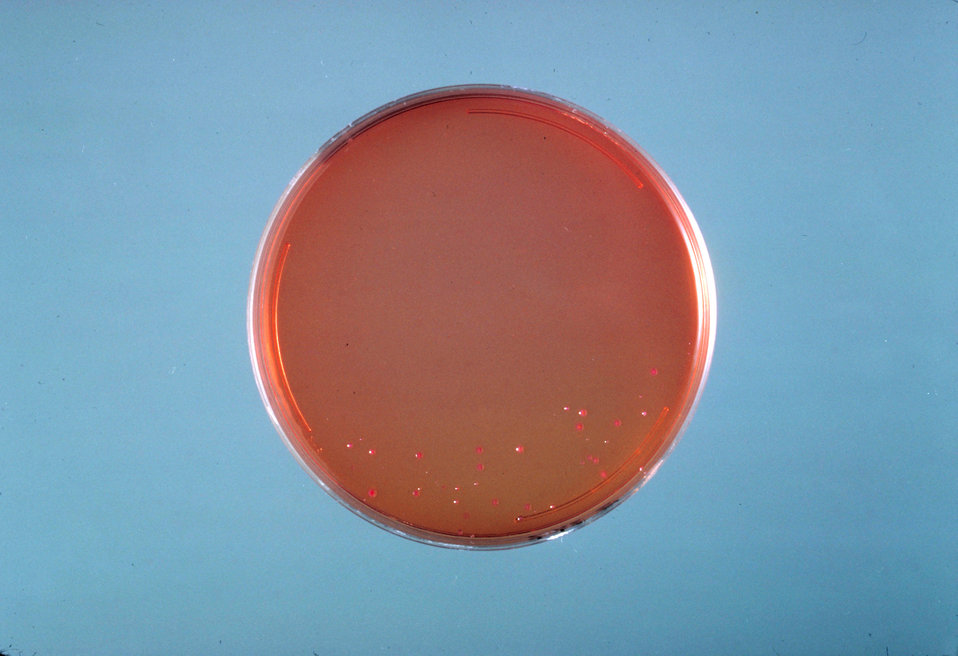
This is a SS agar plate culture of Enterobacter sakazakii after 24 hours of growth at 36� C.